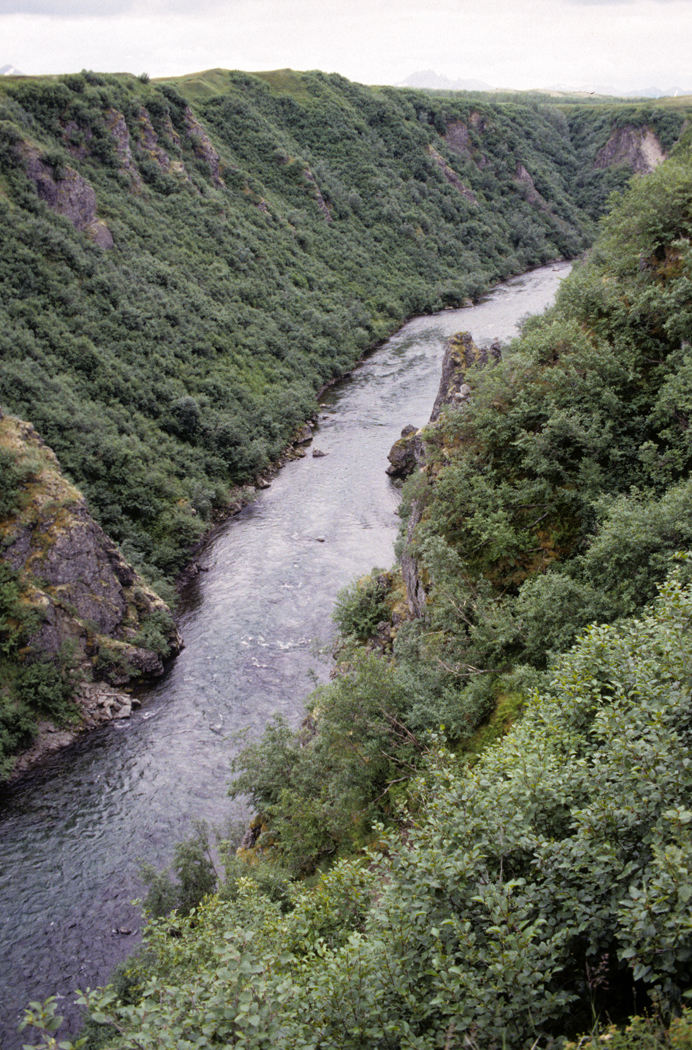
Kemuk River

View of the Kemuk River